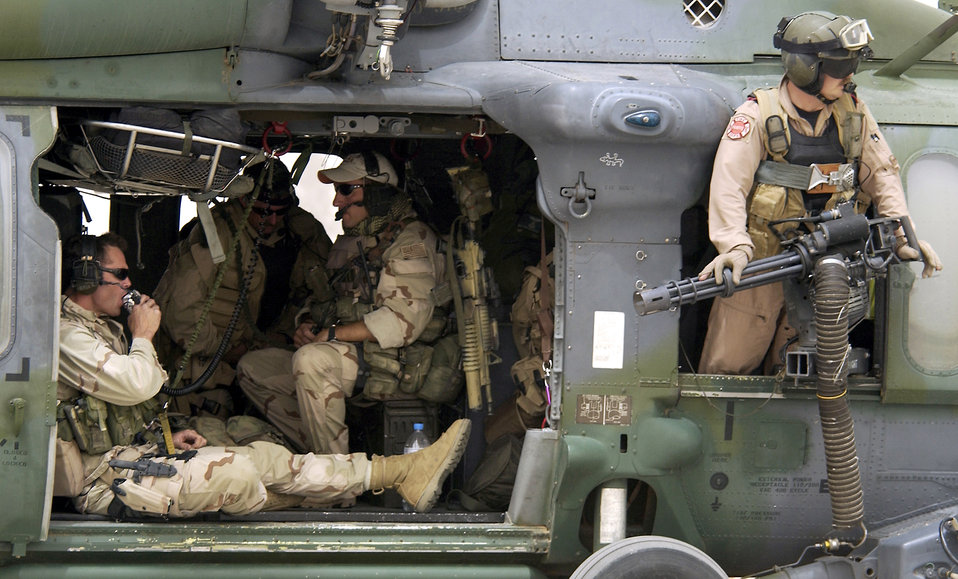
The search begins

OPERATION IRAQI FREEDOM -- A HH-60G Pave Hawk helicopter crew from the 301st Rescue Squadron prepare to go on a mission April 8 at a forward deployed location in southern Iraq during Operation Iraqi Freedom.